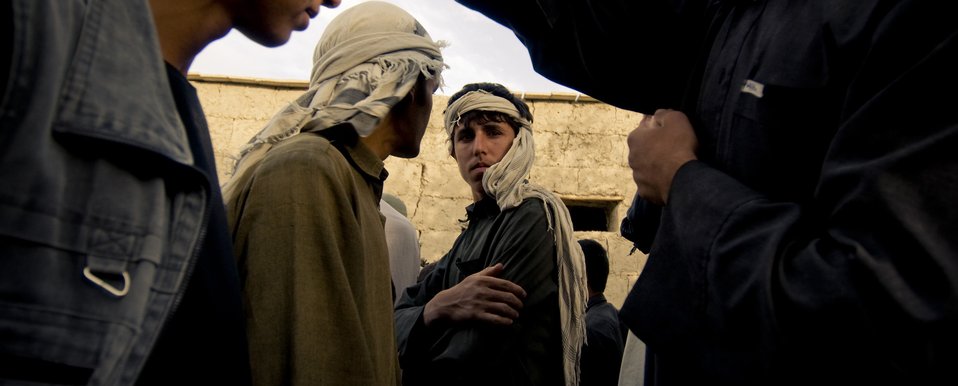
Village visit

An Afghan villager looks down at a camera recently in an Afghan village. The adults of the village are not as trusting as the children, but appreciated the help from Americans.